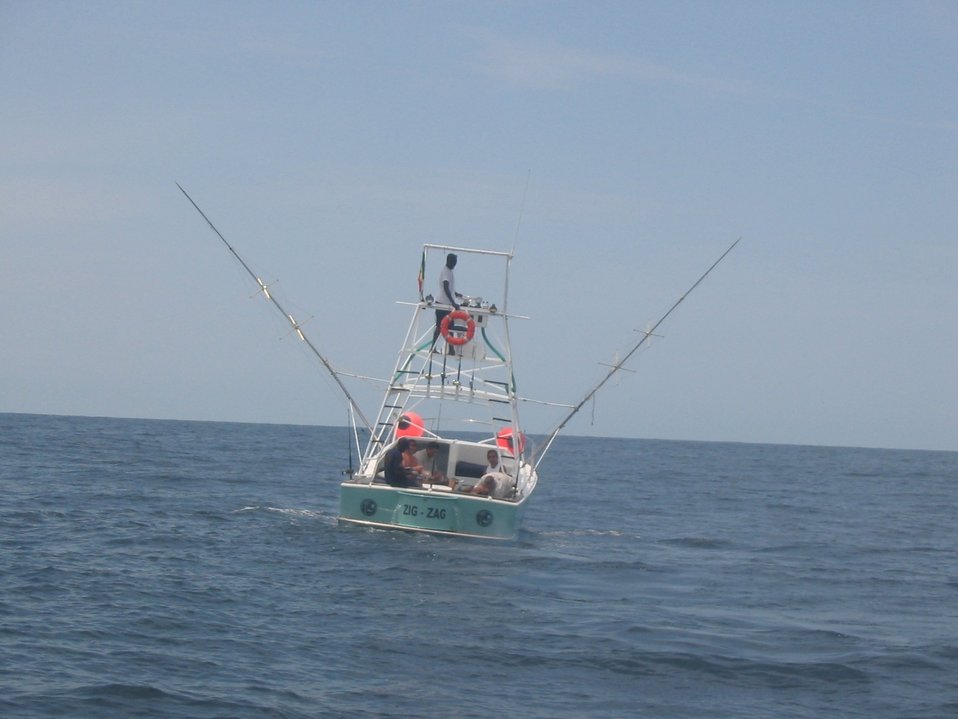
Sport fishermen trolling